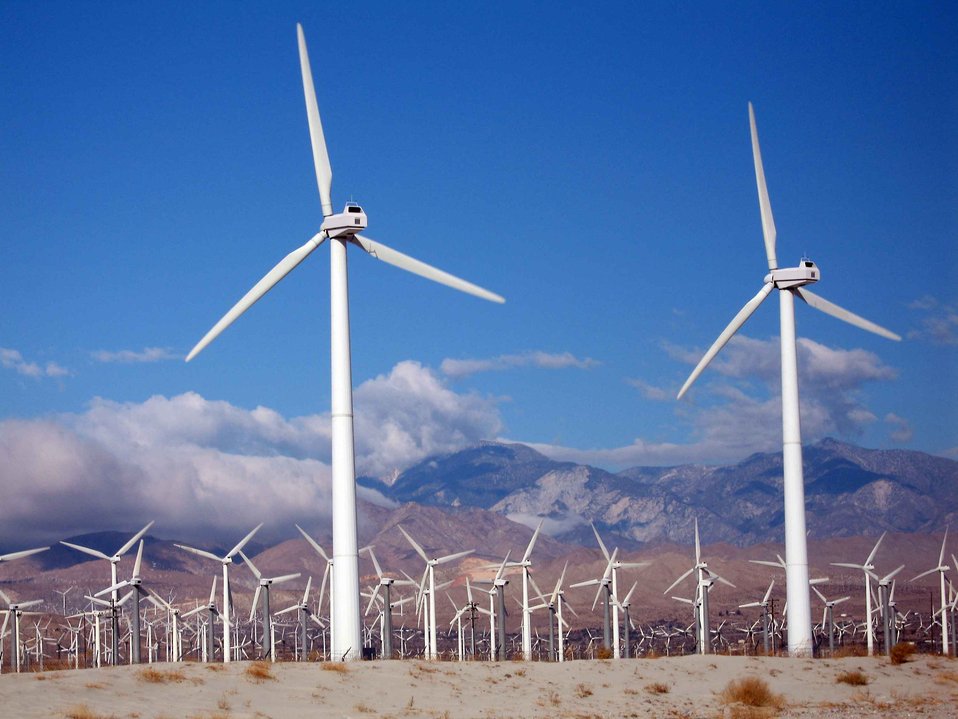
English:
Image title: A close shot of wind turbines wind farm Image from Public domain images website, http://www.public-domain-image.com/full-image/wallpapers-public-domain-images-pictures/a-close-shot-of-wind-turbines-wind-farm.jpg.html